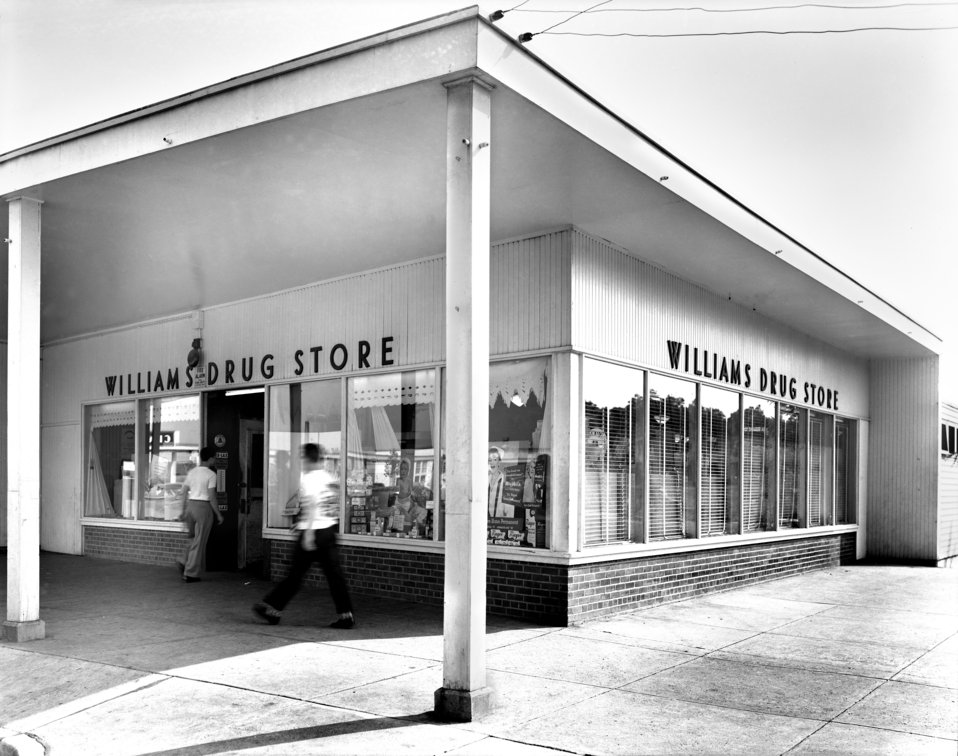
Williams Drug Store Jackson Square Oak Ridge 1950

6120 DOE photo Ed Westcott 8-8-1950 Oak Ridge Tennessee